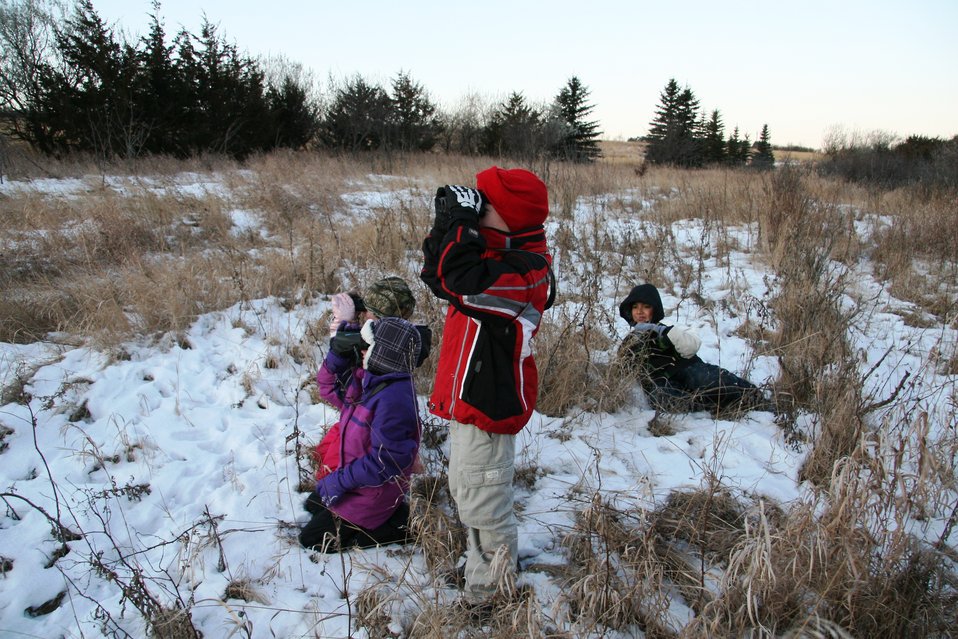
'There's a Bird!'